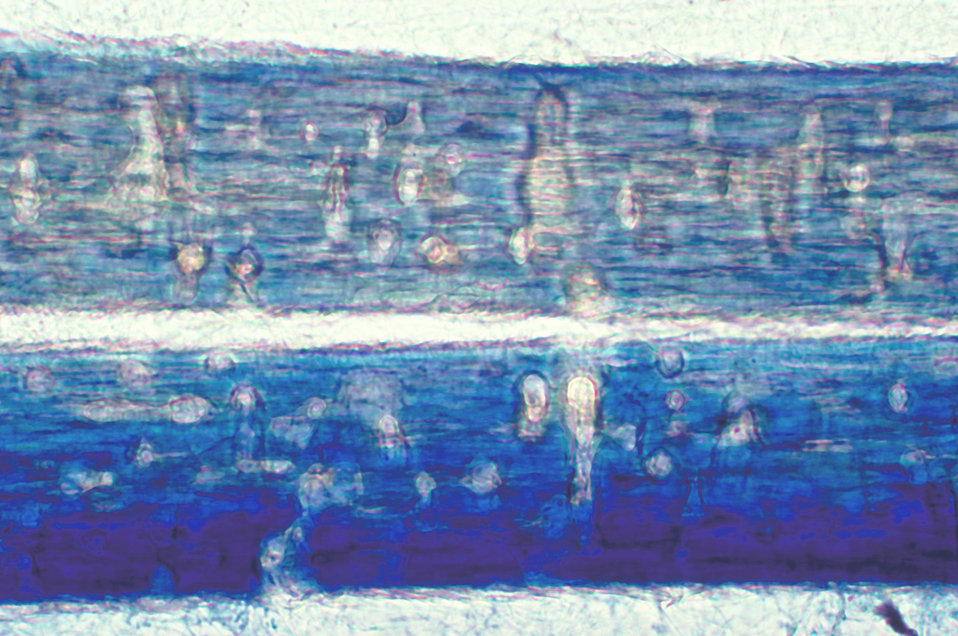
This magnified image reveals hair perforations caused by the fungus Trichophyton mentagrophytes.